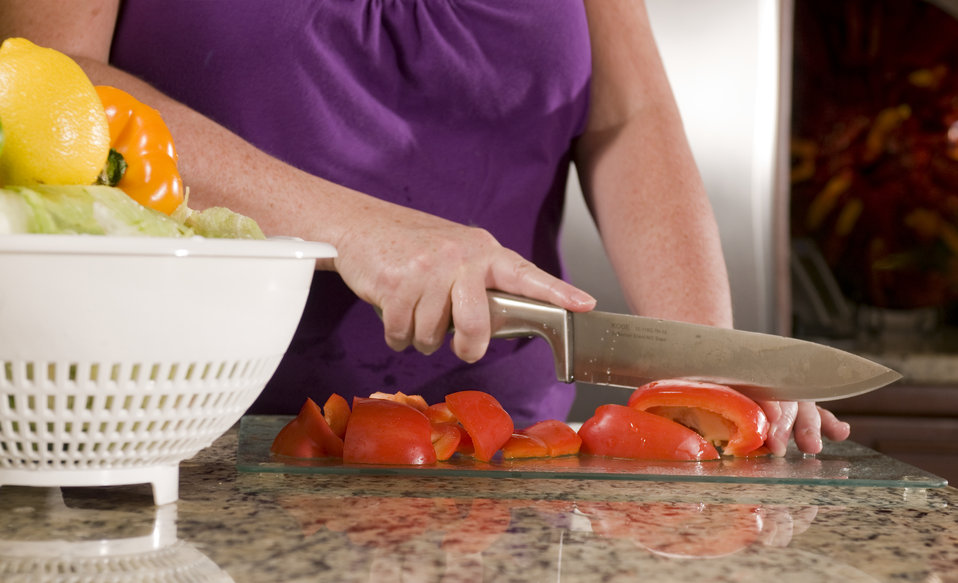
Here we see a woman in a kitchen setting photographed in the process of preparing a number of just-washed red bell peppers, atop a clean glass cutting board. A colander is also shown containing some cleaned produce including a lemon, some lettuce, and an orange bell pepper, awaiting their turn on the cutting board. It is very important to prepare foods in as clean environment as possible, thereby, minimizing the possibility of introducing foodborne contaminants into the food preparation process.